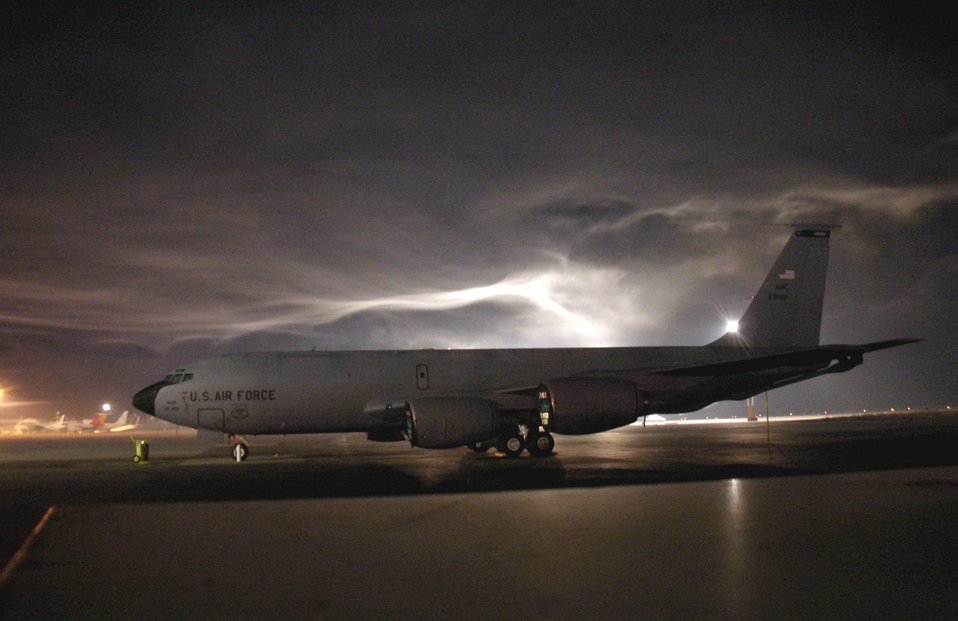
Airpower Summary for Aug. 10, 2007

A KC-135 Stratotanker, assigned to the 22nd Expeditionary Air Refueling Squadron, sits on the flightline at Manas Air Base, Kyrgyzstan. The Stratotanker's air refueling mission greatly enhances the Air Force's capability to accomplish its primary missions of global reach and global power. It also provides aerial refueling support to Air Force, Navy and Marine Corps aircraft as well as aircraft of allied nations.